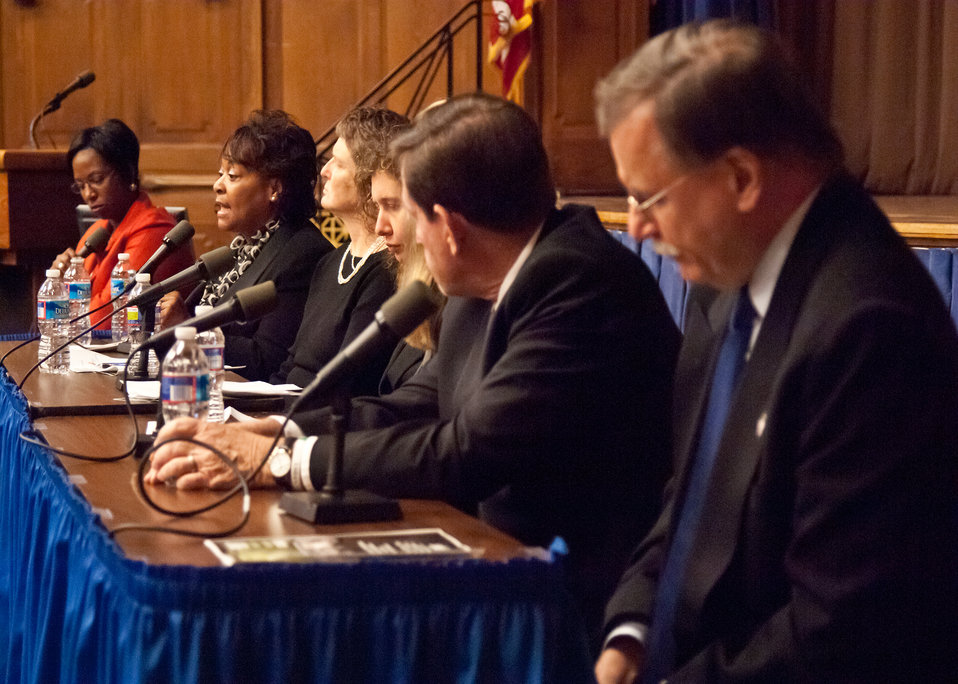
From left: Carmen Jones, Senior Advisor, Departmental Management the moderator of the USDA Panel of Success: Hiring and Employing Individuals with Disabilities and panel members Elaine Jones, Food and Nutrition Service, Robin Heard, Deputy Assistant Secretary for Administration, Francesca Yabraian, Office of the Deputy Assistant Secretary for Administration, Gari Jo Green, Office of Inspector General, Richard Swenson, Departmental Management, William Bethel, National Institute of Food and Agriculture offers their experience and advice to U.S. Department of Agriculture employees during the U.S. Department of Agriculture National Disability Employment Awareness Month event in Washington, DC, on Wednesday, October 5, 2011. Agriculture Secretary Tom Vilsack is dedicated to establishing the USDA as the lead Federal agency in employing individuals with disabilities. The theme for the event is “Profit by Investing in Workers with Disabilities.” USDA is committed to ensuring that all our programs are accessible and inclusive of individuals with disabilities.